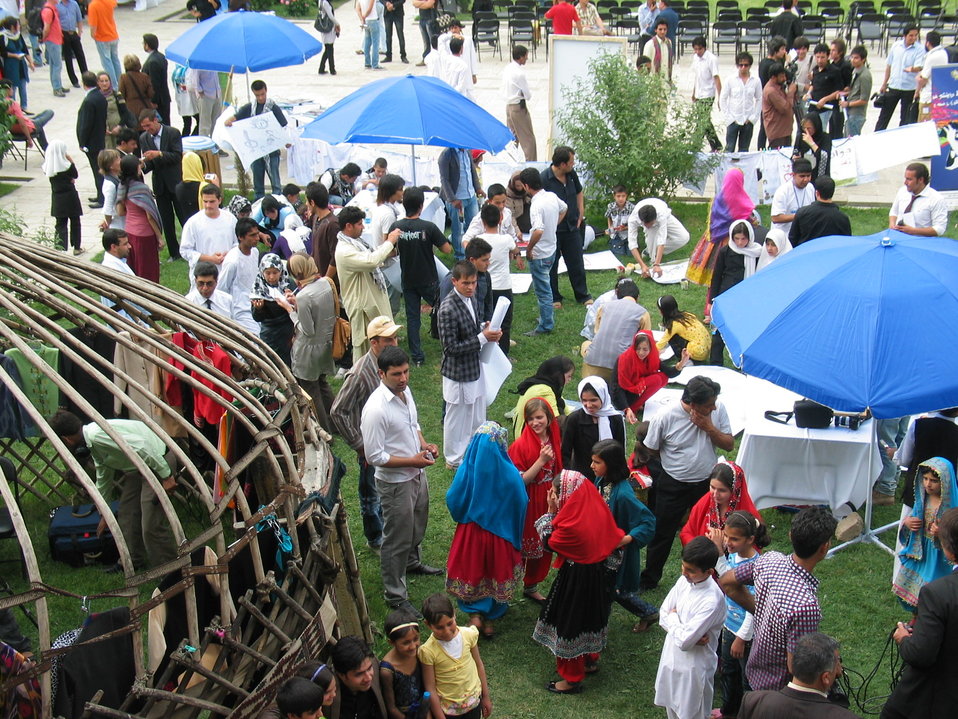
Afghan Youth Voices 011